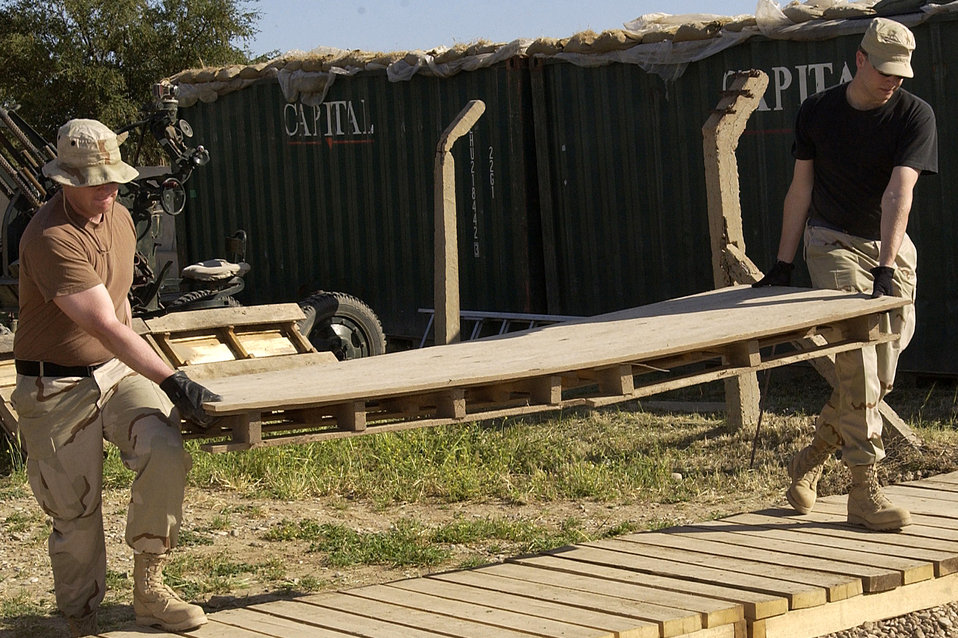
Future sidewalk

KIRKUK AIR BASE, Iraq -- Staff Sgt. Justin Sande (left) and Senior Airman Michael Espinoza carry a piece of what will become a wooden sidewalk at the communications compound here April 27. Sergeant Sande and Airman Espinosa are assigned to the 506th Communications Squadron.